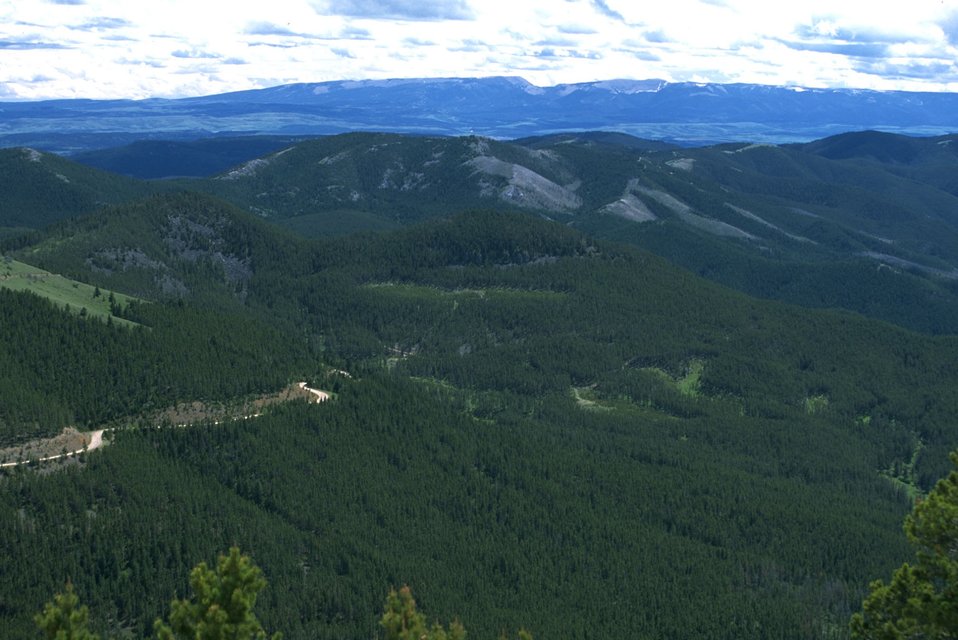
Looking toward the Big Snowy Mountains